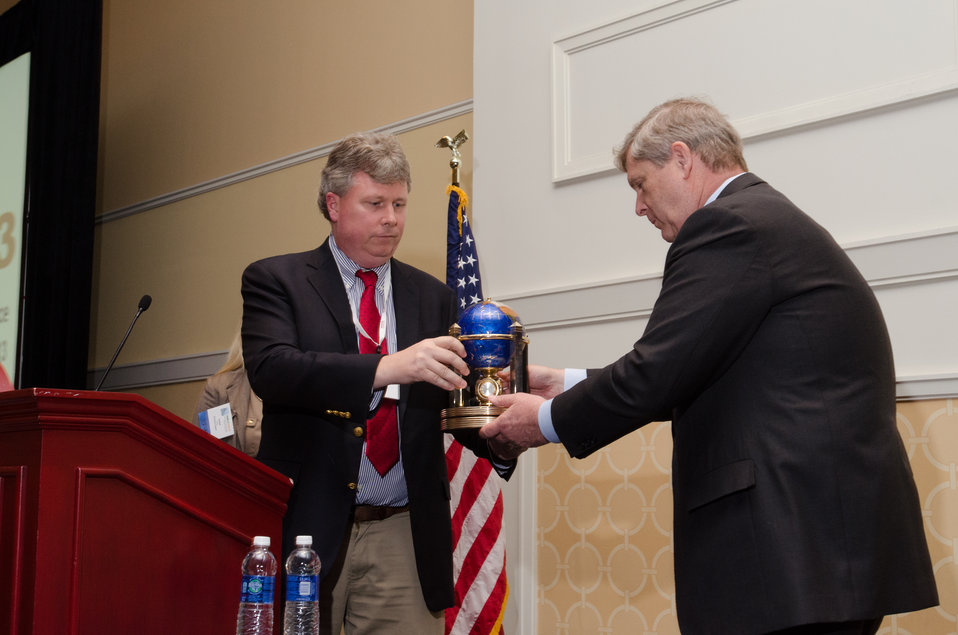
Biofuels Digest Publisher and Editor Jim Lane presents U.S. Department of Agriculture Secretary Tom Vilsack the Global Biofuels Leadership Award for his service in bringing food, fiber, feed and fuel for all. at the Advanced Biofuels Leadership Conference at Gaylord National Harbor in Maryland, Monday, April 15, 2013.